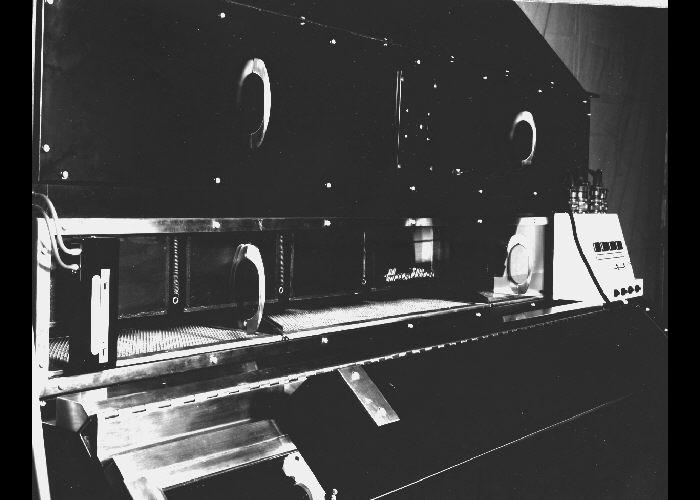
This 1958 depicts what were hooded safety cabinets on the CDC premises.